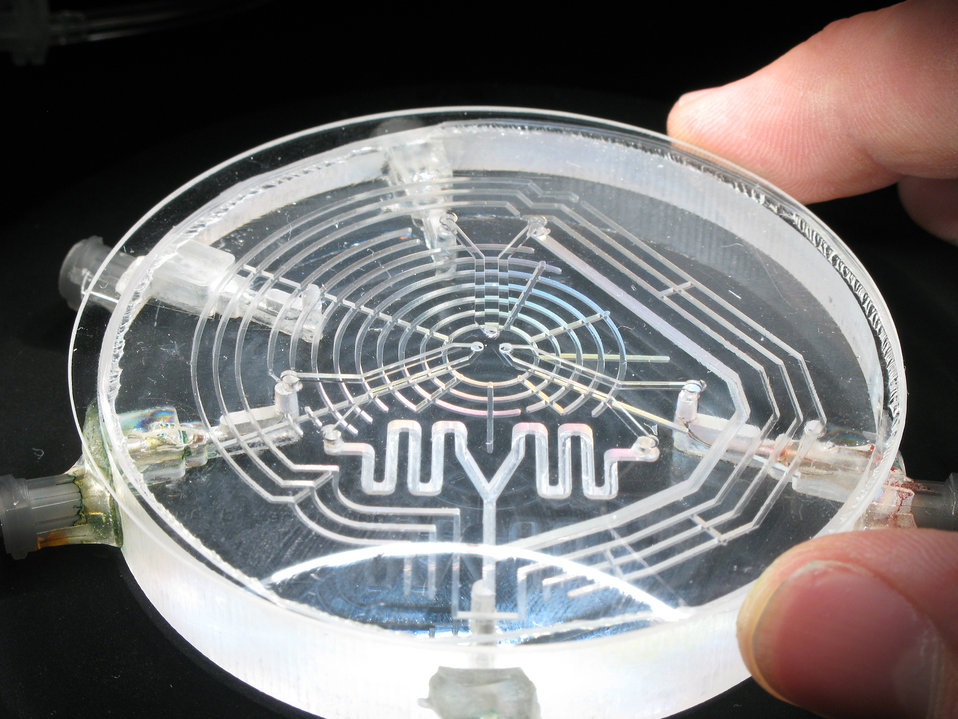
Microfluidic palette

The NIST microfluidic palette. The mixing area is the pin-sized chamber bordered by three holes in the center of the top layer.